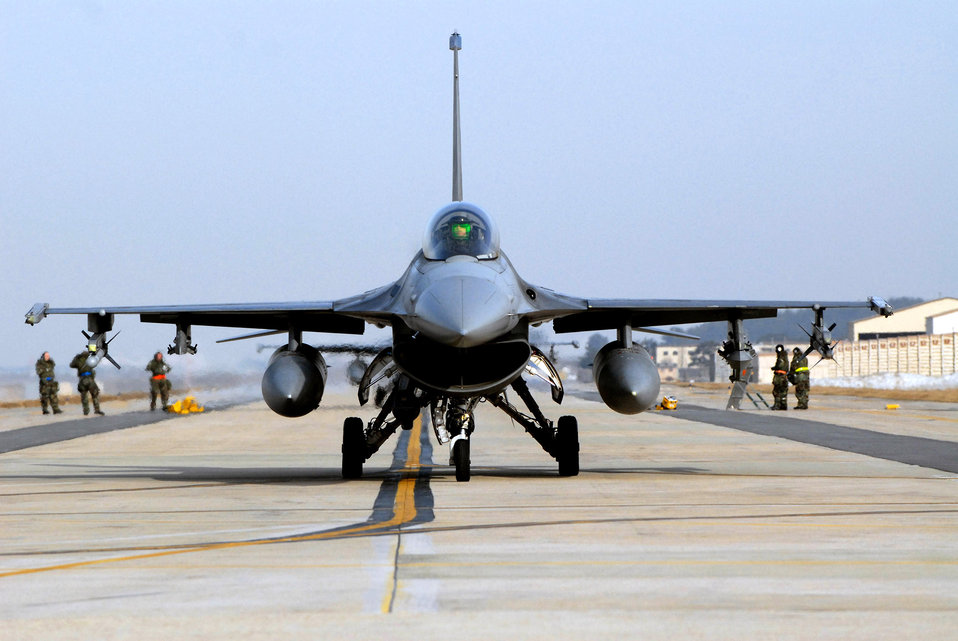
Ready to go

An F-16 Fighting Falcon from the 35th Fighter Squadron prepares to take off Jan. 17 at Kunsan Air Base, South Korea, for joint flying operations during an operational readiness exercise.